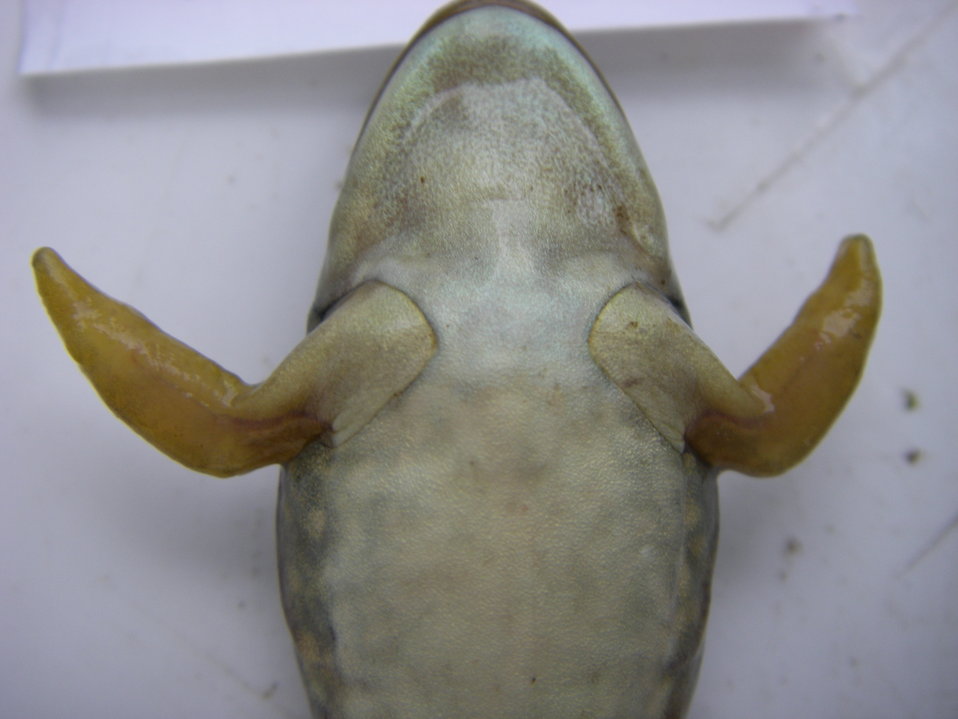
Bullfrog tadpole from Erie National Wildlife Refuge, PA mi ssing digits on both forelimbs.